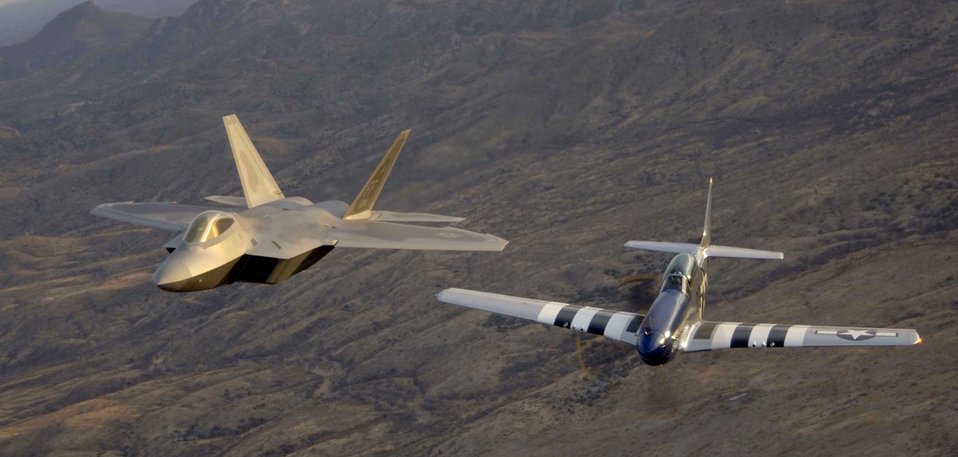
Heritage flight

An F-22A Raptor and a World War II-era P-51 Mustang fly over Tucson, Ariz., Sunday, March 5, 2006, during the 2006 Heritage Conference. The conference combines different U.S. aircraft from more than 60 years of aviation history to ensure certification in performing air shows worldwide.